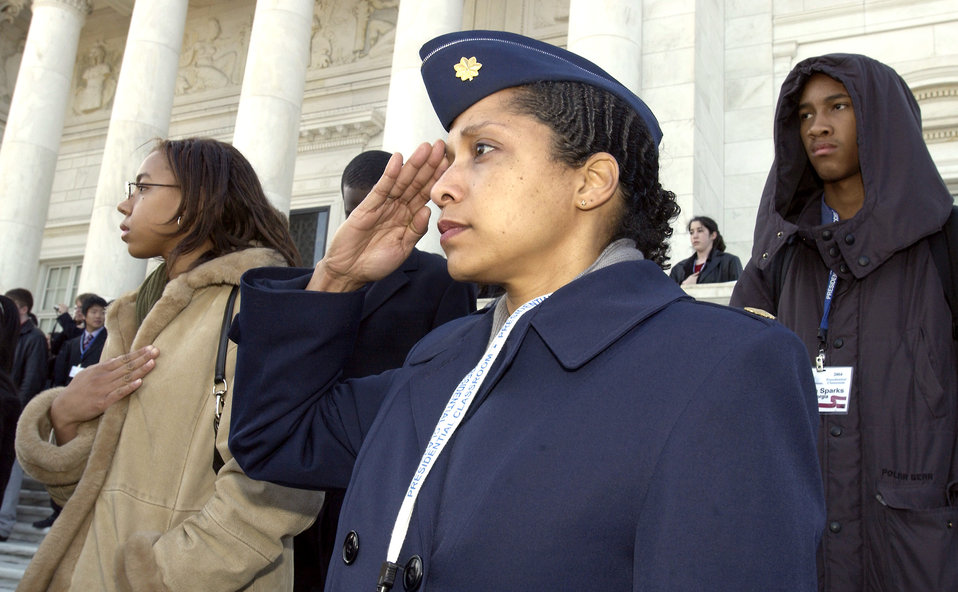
Presidential Classroom renders honors

WASHINGTON -- Maj. Aurelia Carr-Olverson, along with some of the 240 students attending a weeklong Presidential Classroom session here, renders honors during a wreath-laying ceremony at Arlington National Cemetery's Tomb of the Unknowns. Major Carr-Olverson is chief of Air Force plans and programs staff services division at the Pentagon. She was a volunteer instructor for the civic-education program.